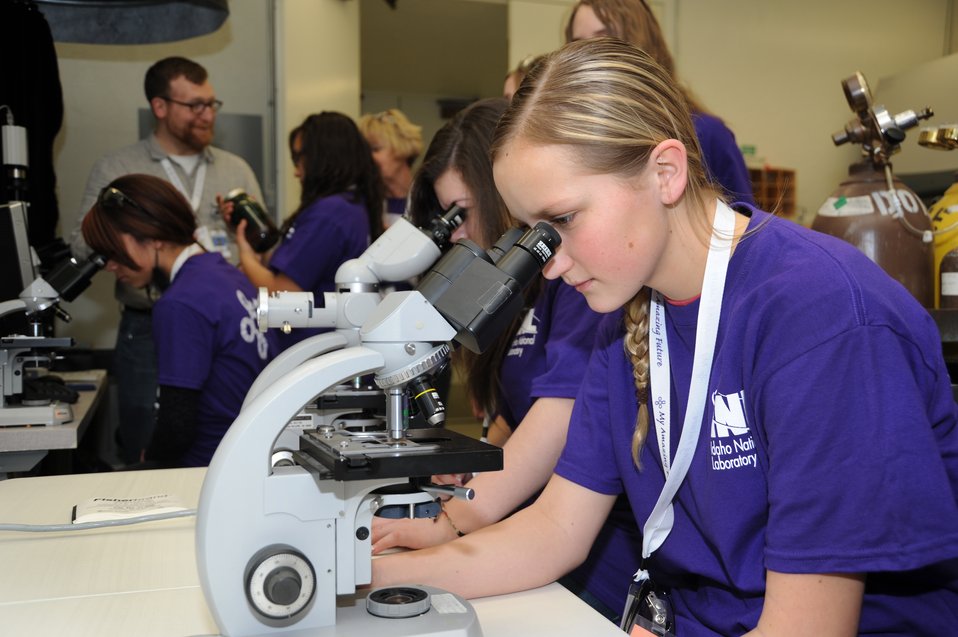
Idaho National Laboratory's annual, day-long My Amazing Future event shows career options to get students excited about science and technology.